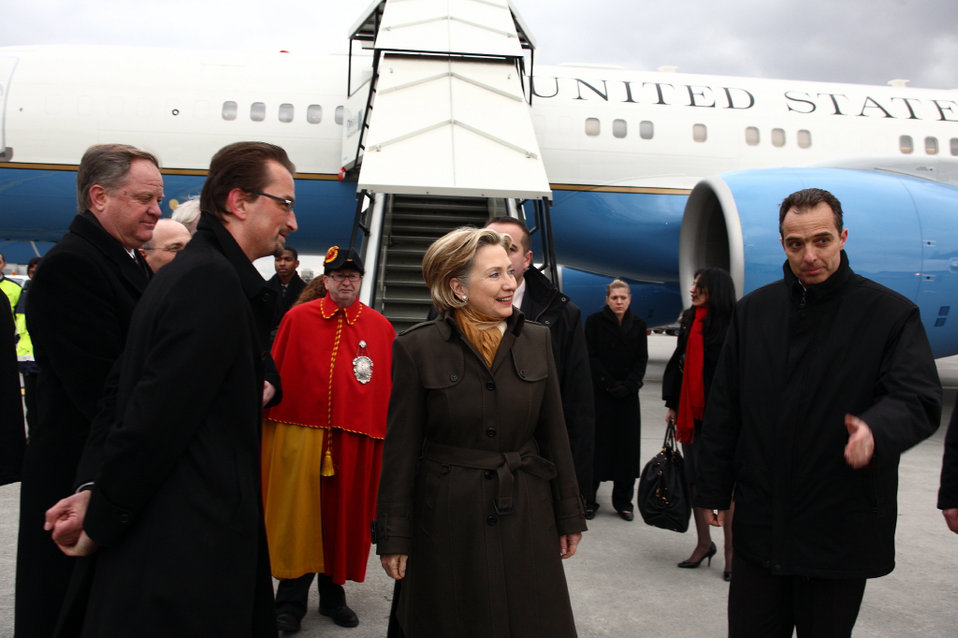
Arrival in Geneva, Switzerland

U.S. Secretary of State Hillary Rodham Clinton arrives in Geneva, Switzerland March 6, 2009.